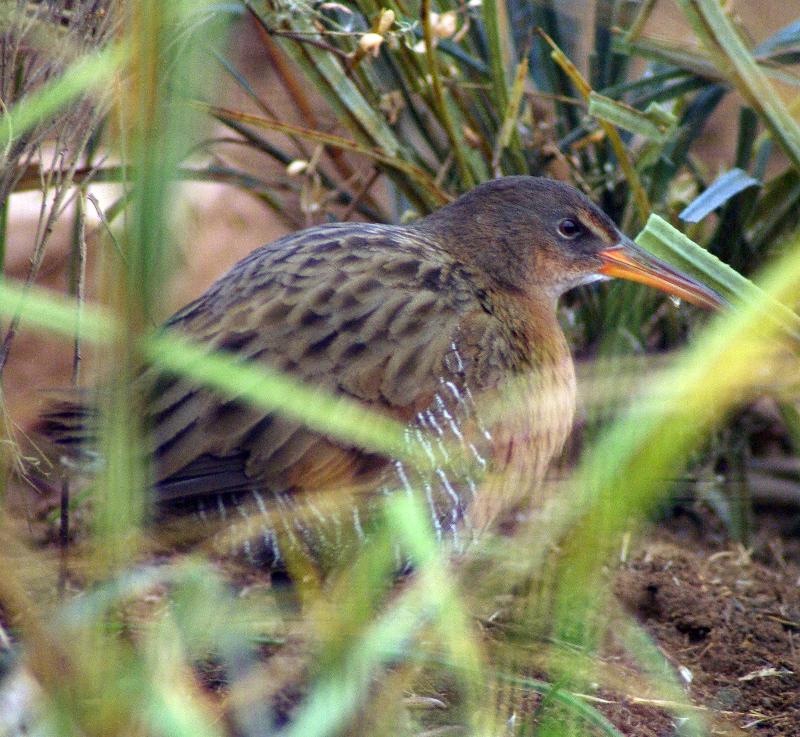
light-footed clapper rail

An endangered light-footed clapper rail seeks concealment in marsh grass. The species depends on Southern California coastal wetlands, a rare habitat type which has almost all been lost to development.

Tijuana Slough National Wildlife Refuge, CA